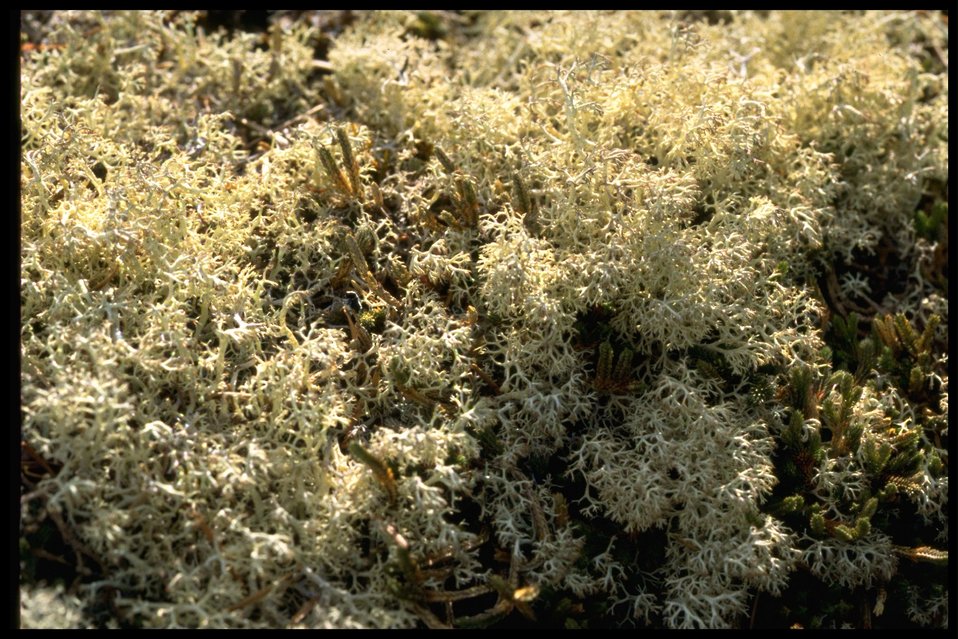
Undetermined.